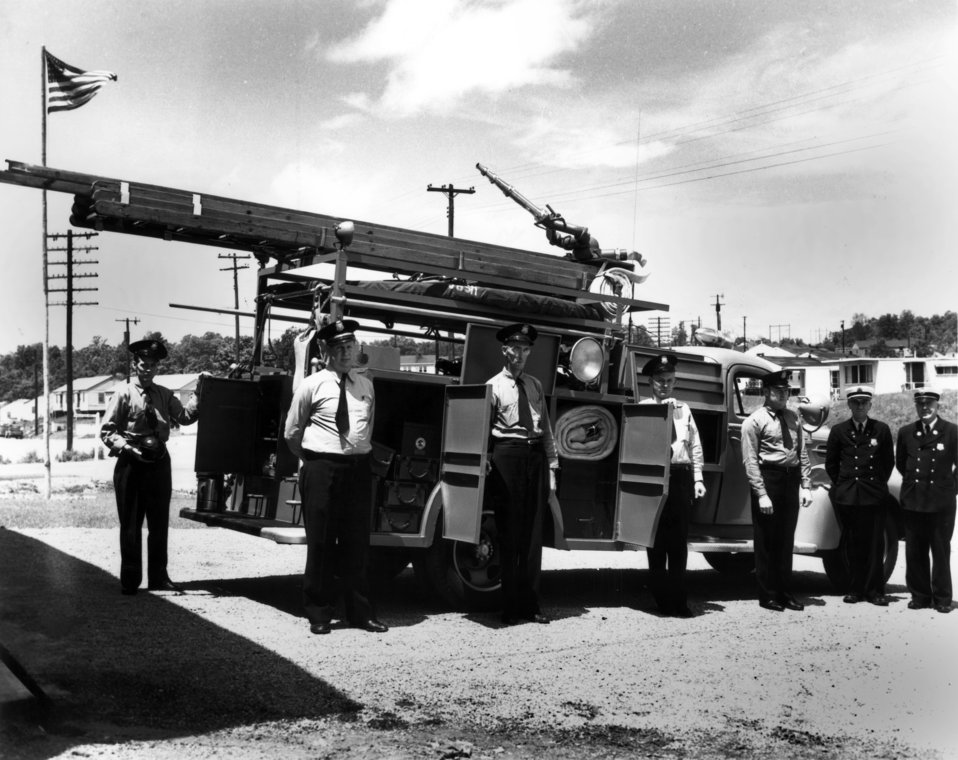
Fire Truck- Emergency Sit-up Oak Ridge Tennessee

1744 DOE photo by Ed Westcott 1945 Oak Ridge Tennessee